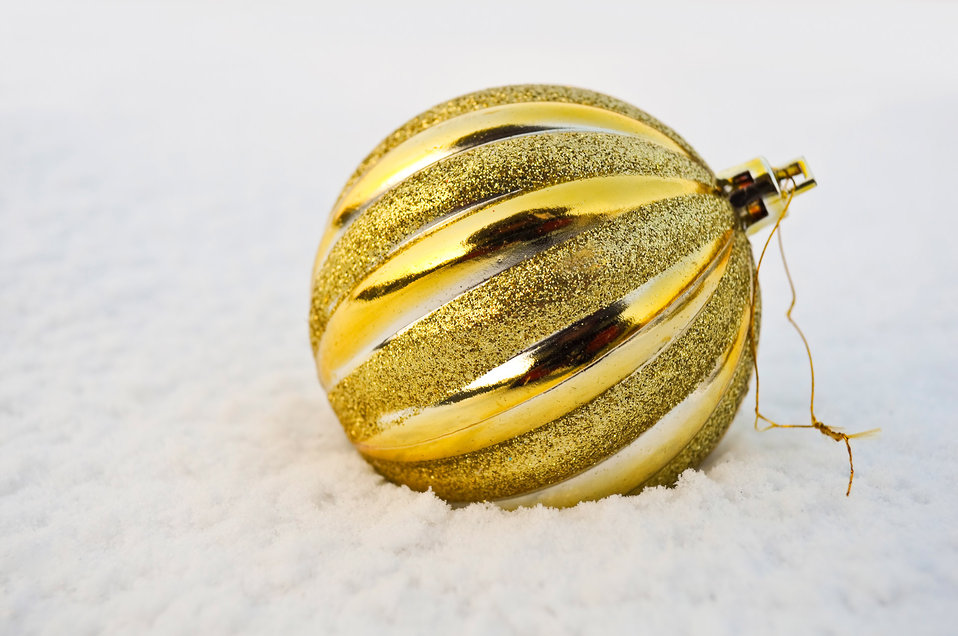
Christmas decorations in the snow.